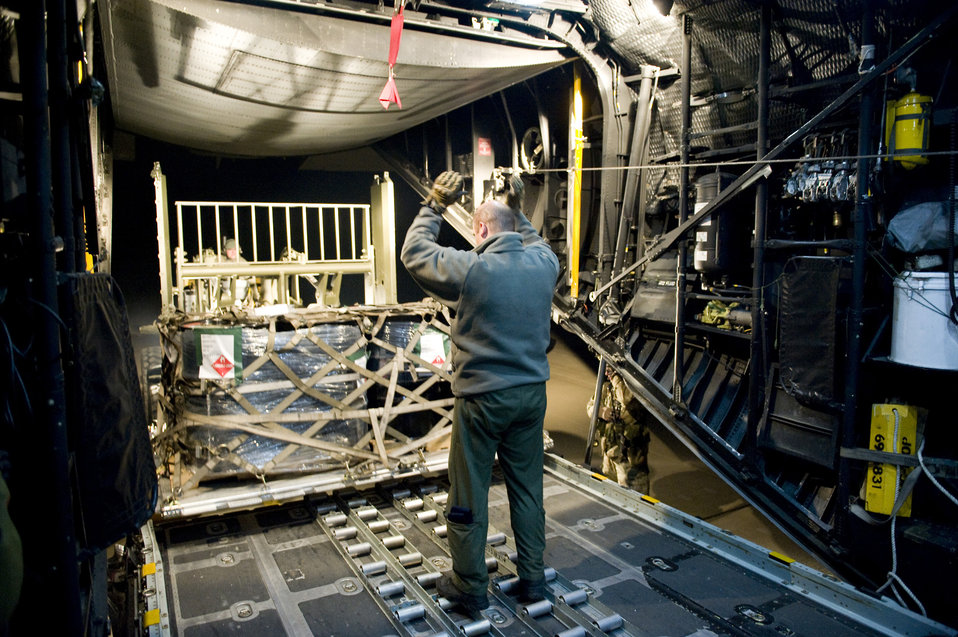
Standing up at Sendai airport

Senior Airman Ramon Mortensen backs up a pallet of fuel March 16, 2011, at Sendai airport in Japan. The crew brought water, food, fuel and other general supplies to 353rd Special Operations Group members who are conducting search and rescue missions from the airport. The Airmen are establishing a usable runway at Sendai Airport to help with Japan's earthquake and tsunami relief. Airman Mortenson is assigned to the 17th Special Operations Squadron.